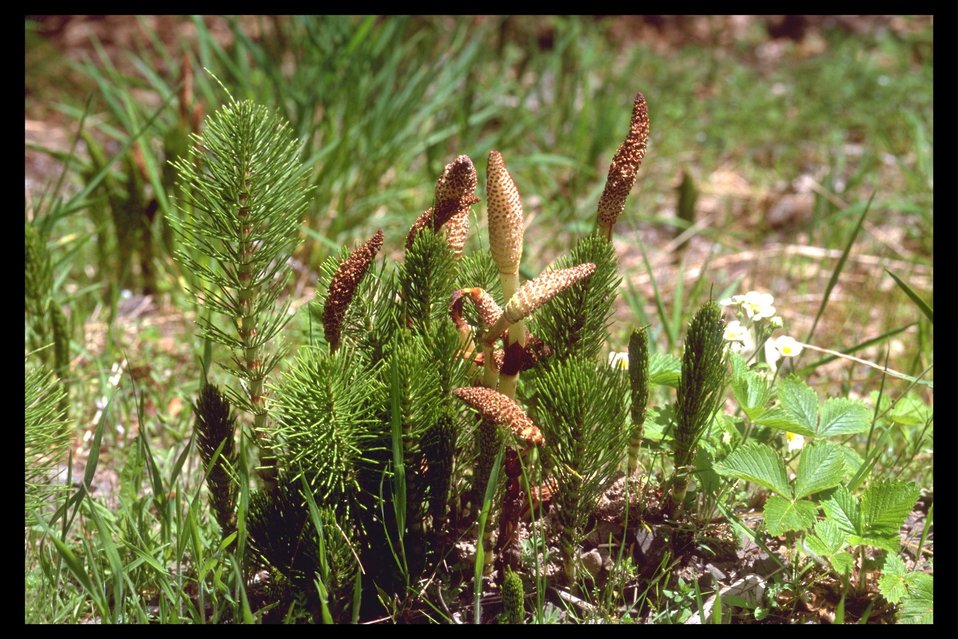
Giant Horsetail (Equisetum telmateia) along Upper Trail Creek.